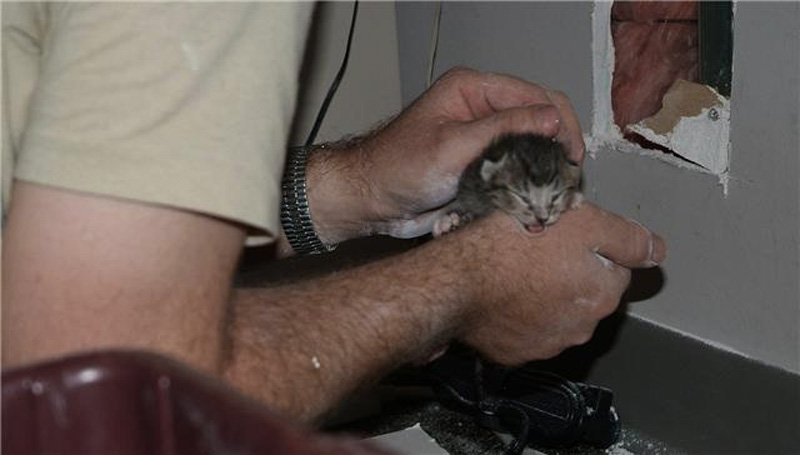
Airmen rescue kittens inside wall

Master Sgt. Mark Young holds a days-old kitten he rescued June 22 after cutting holes inside a wall in a building at Hurlburt Field, Fla. Members of the 505th Command and Control Wing cared for the litter of four until they were turned over June 23 to a wildlife refuge until they can be adopted.